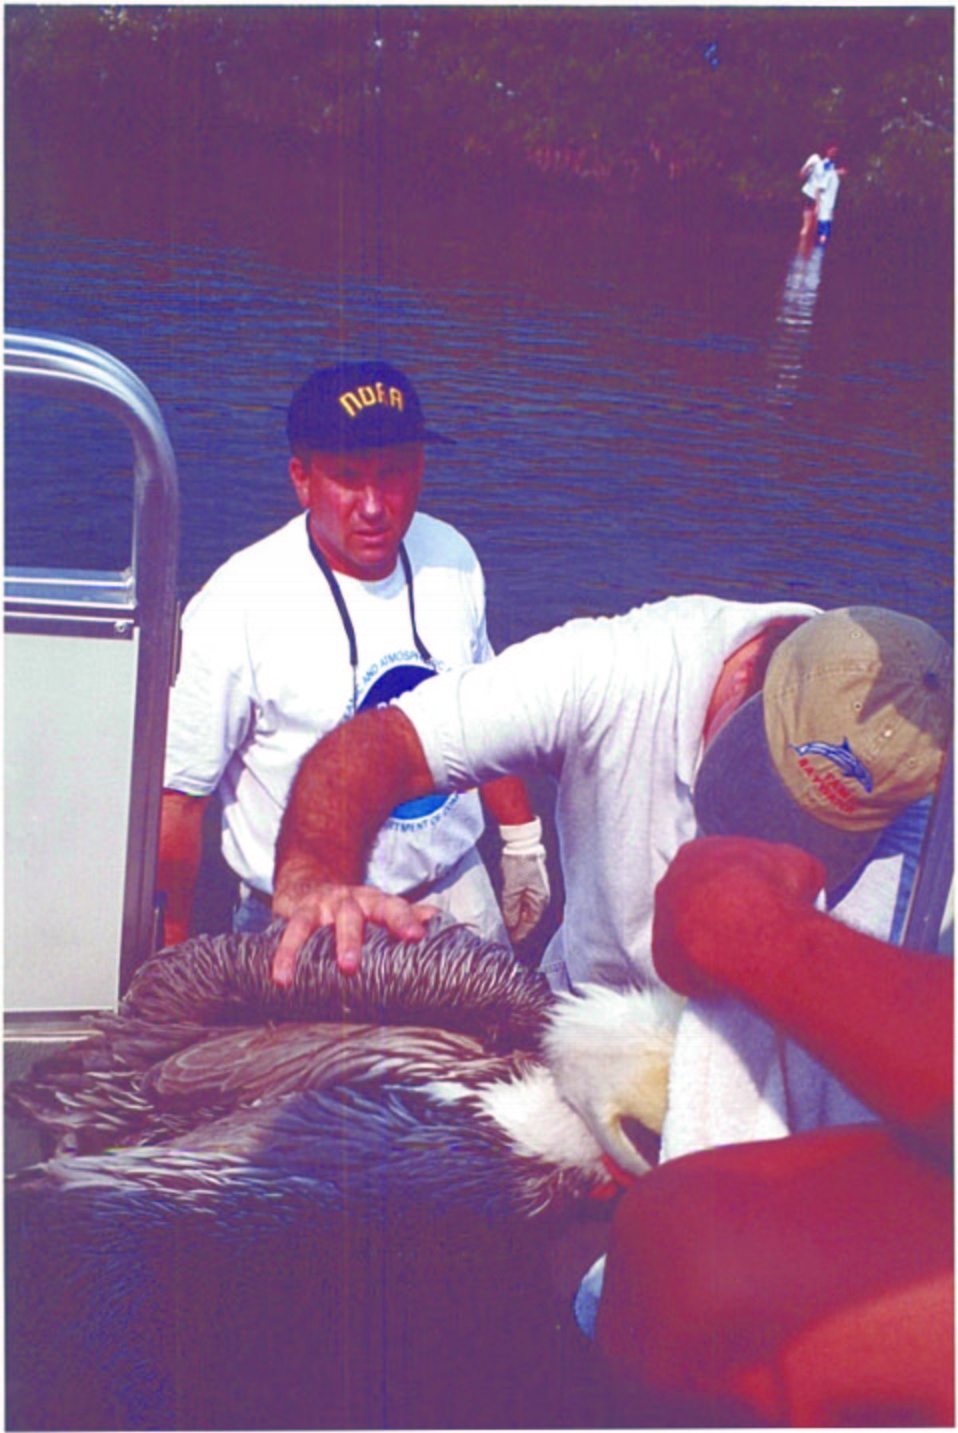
Scott Gudes of NOAA passes an injured pelican onto a waiting boat that will take the bird to a rehabilitation center.